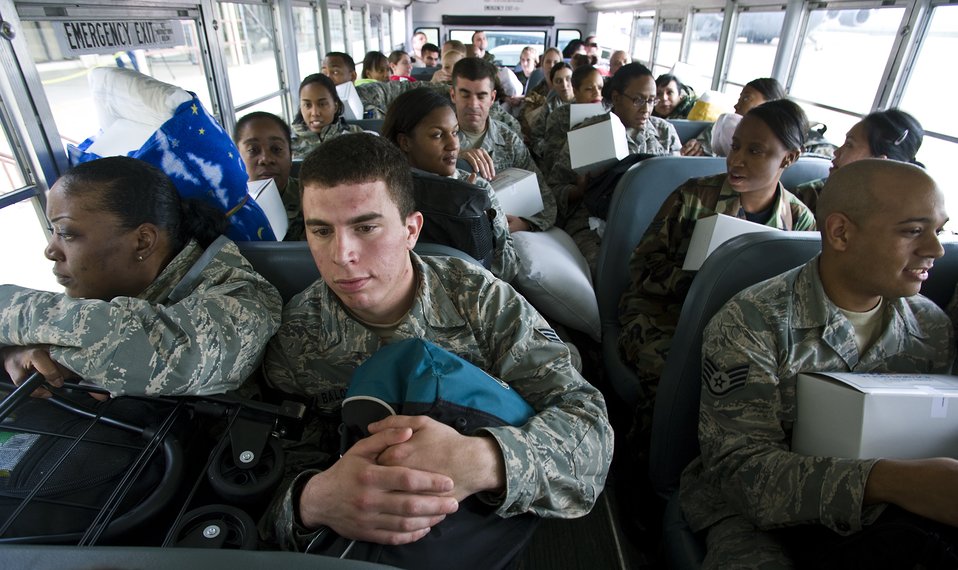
Air Force medics deploy to support Chilean medical efforts

More than 80 Airmen from 13 different bases deployed March 8, 2010, to Chile from Lackland Air Force Base, Texas, to aid local medics in their response to victims of the Feb. 27 8.8 magnitude earthquake in Chile. The Air Force Expeditionary Medical Support team will operate in the city of Angol, Chile, and be capable of providing medical care to earthquake victims.